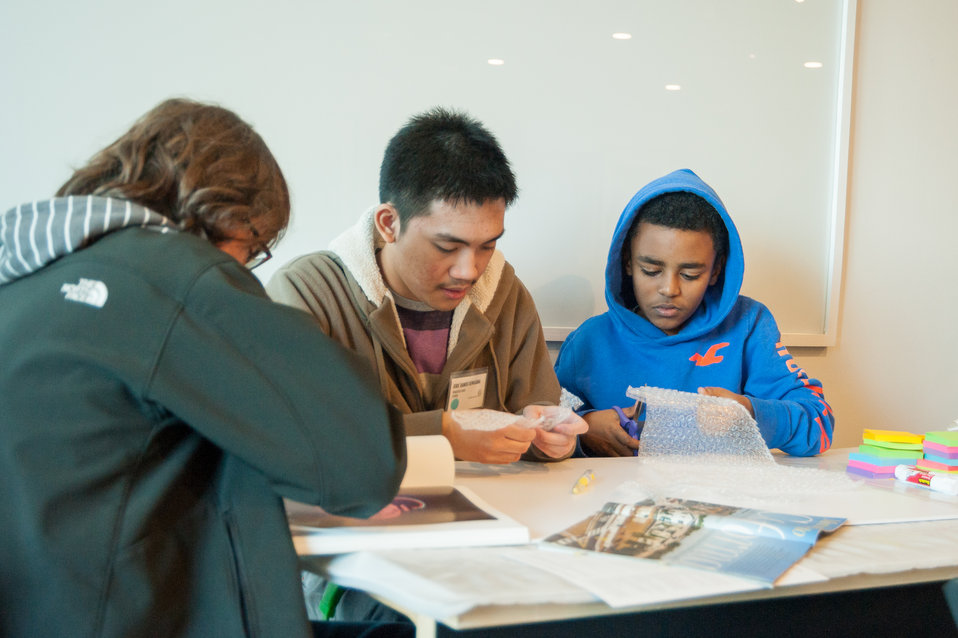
Mentor NDFW Event 2014

Mentor Foundation USA, in partnership with the National Institute on Drug Abuse (NIDA) and other key partners hosted a Youth Drug Facts Rally at the House of Sweden on Thursday, 30th January 2014. Approximately 200 students from five local high schools attended and had the opportunity to interact with top U.S. scientific experts and inspiring guest speakers to “shatter the myths” about drugs and substance abuse, while pledging to stay drug-free.